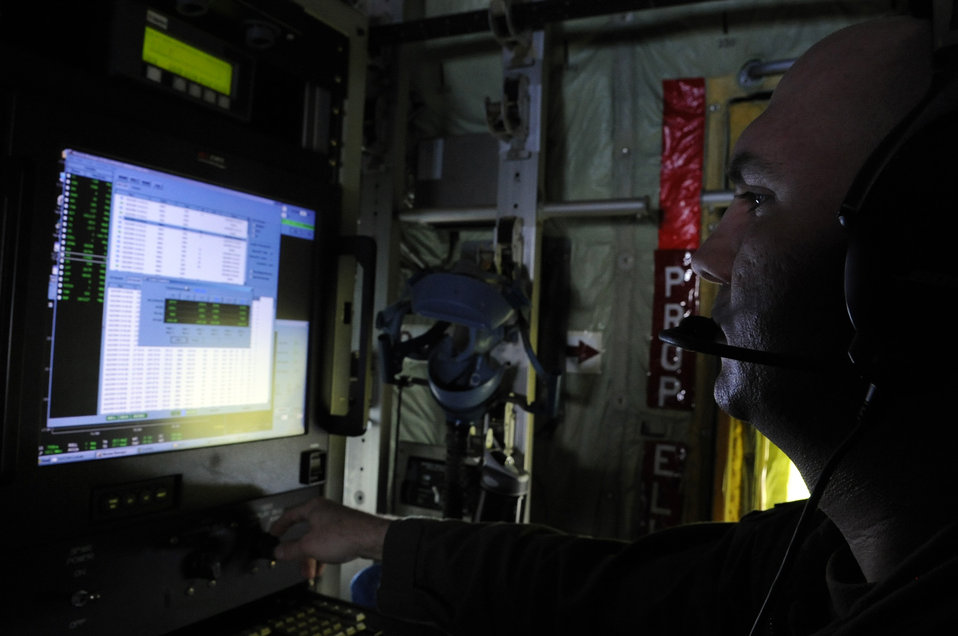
Training with the 'Hurricane Hunters'

Capt. Tobi Baker collects weather data during a training mission June 6 on a flight to St. Croix, V.I., on a WC-130J Hercules from Keesler Air Force Base, Miss. Captain Baker is a flight meteorologist assigned to the Hurricane Hunters of the 53rd Weather Reconnaissance Squadron, and is ready to start his second season.